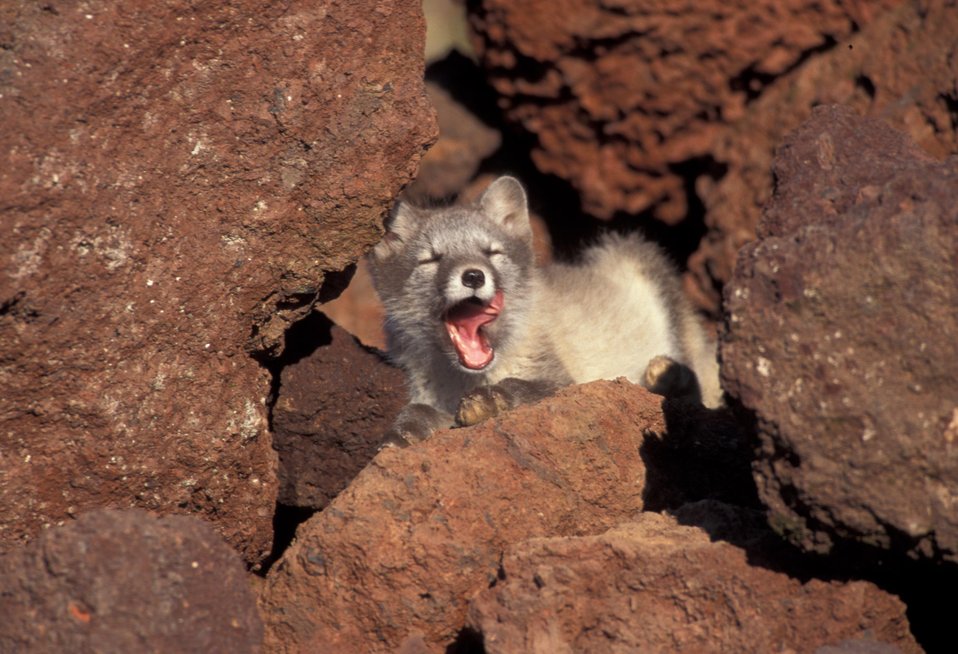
Arctic fox

Yawning arctic fox in Alaska, St. George Island. ALASKA MARITIME NATIONAL WILDLIFE REFUGE;AMNWR; birding; Marine birds; cliff nesters; ; Pribilofs; Pribilof Islands; Bering Sea; habitat; Coastal, juveniles